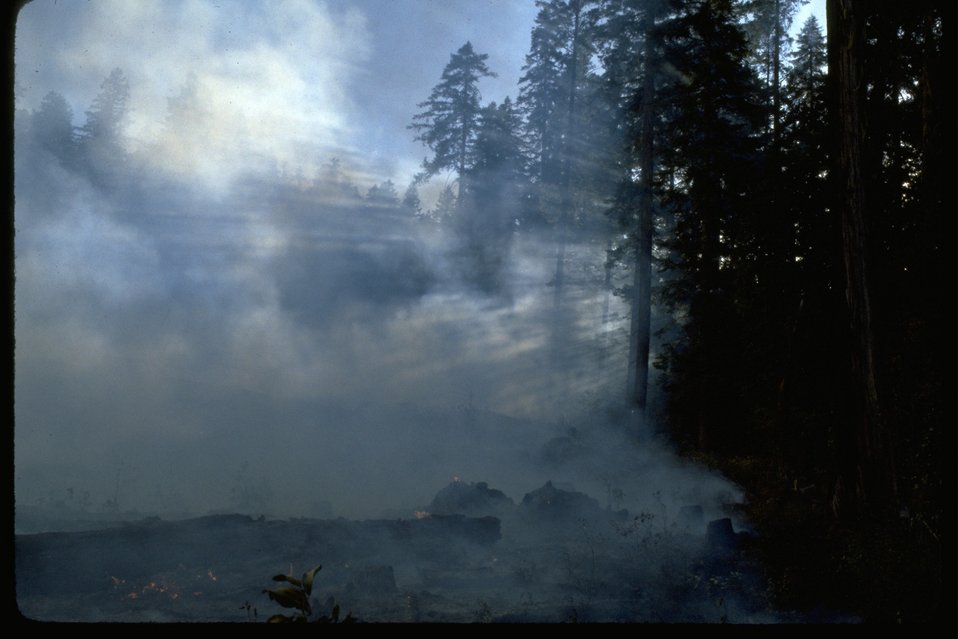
Smoke from fire coming out of wooded area.